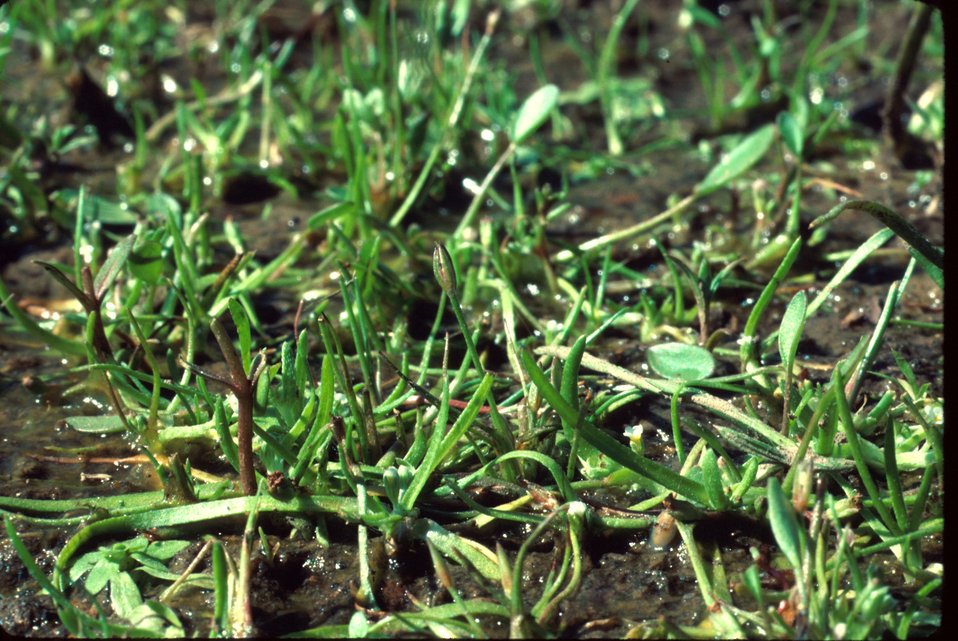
Juncus objectus with limnosella aquatica Wildflower, grass-like